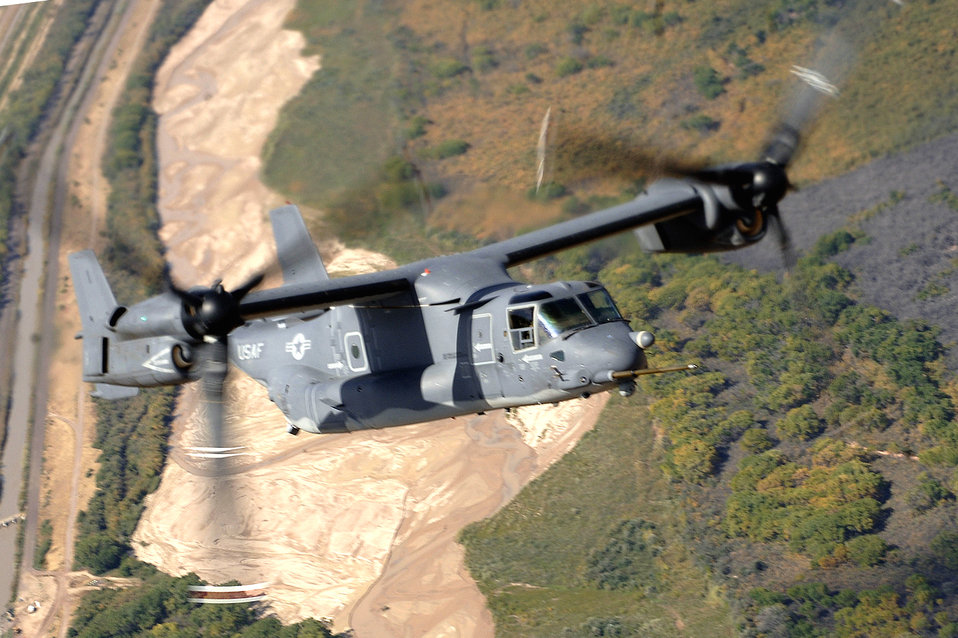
Pilots thrilled by CV-22 capabilities

A CV-22 Osprey flies an air-refueling mission Oct. 5 over New Mexico. The CV-22 adds new capability and fills a long-standing U.S. Special Operations Command requirement to conduct long-range infiltration, exfiltration and resupply missions during night operations.